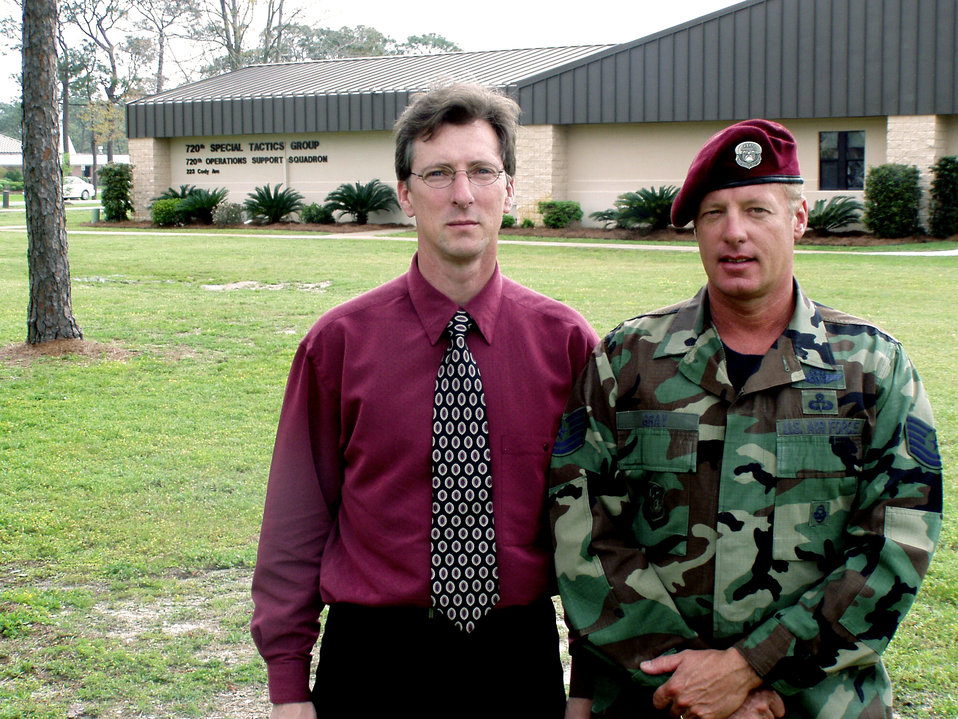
Hurlburt Field rescuers help crash victims, save lives

HURLBURT FIELD, Fla. -- Randy Seeback and Tech. Sgt. Mike Gray helped injured people after a driver hit five of eight cyclists who were standing near a convenience store outside the gate here April 9. Mr. Seeback is a retired combat controller who works as a contractor on the base, and Sergeant Gray is a pararescueman assigned to the 720th Special Tactics Group here.